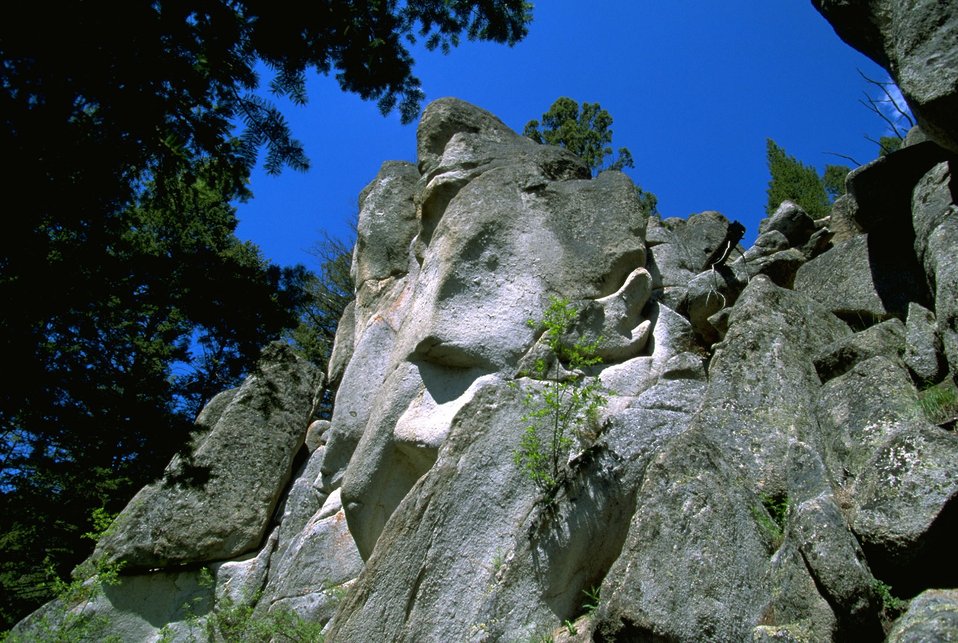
Interesting rock formations